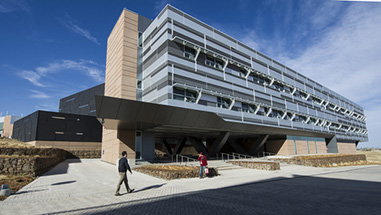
Energy Systems Integration Facility (ESIF) at the National Renewable Energy Laboratory in Golden, CO.